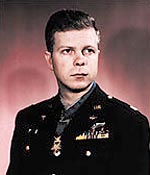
Major Bong

Maj. Richard Bong was the highest-scoring U.S. ace of any war — the “Ace of Aces.”